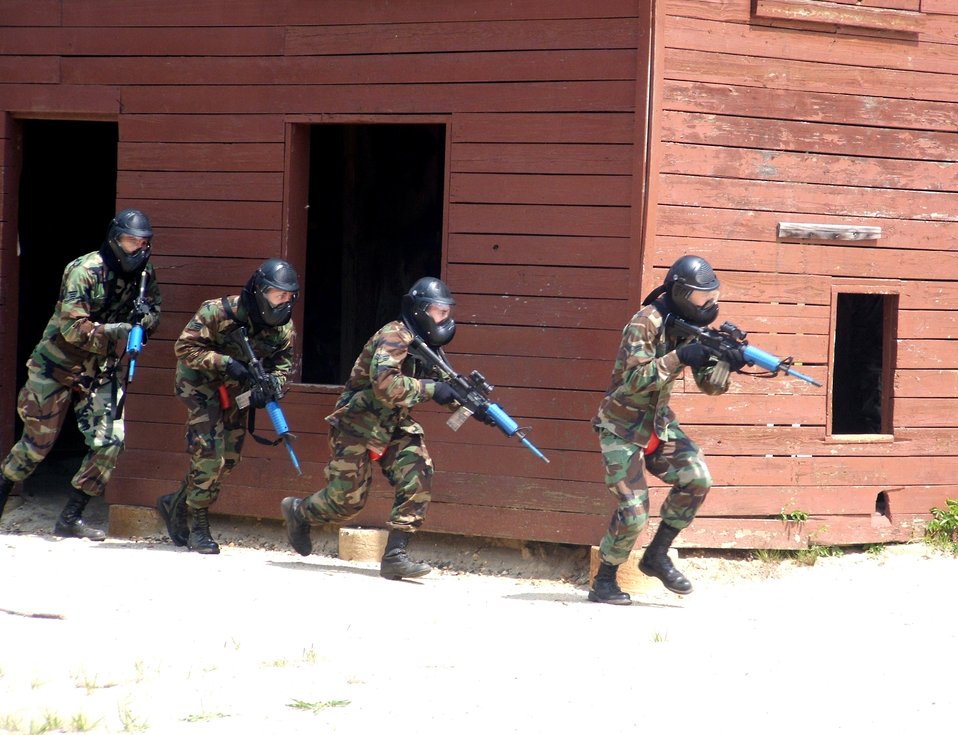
Phoenix Raven Airmen are a special breed

Phoenix Raven course students move next to a building during use-of-force training on May 17, 2006, at Fort Dix, N.J. Raven students, who include Air Force security forces, Navy masters at arms and Army military police, train in combat first aid, tactical self defense and aircraft security. The course is taught by instructors from the Air Mobility Warfare Center's 421st Combat Training Squadron.